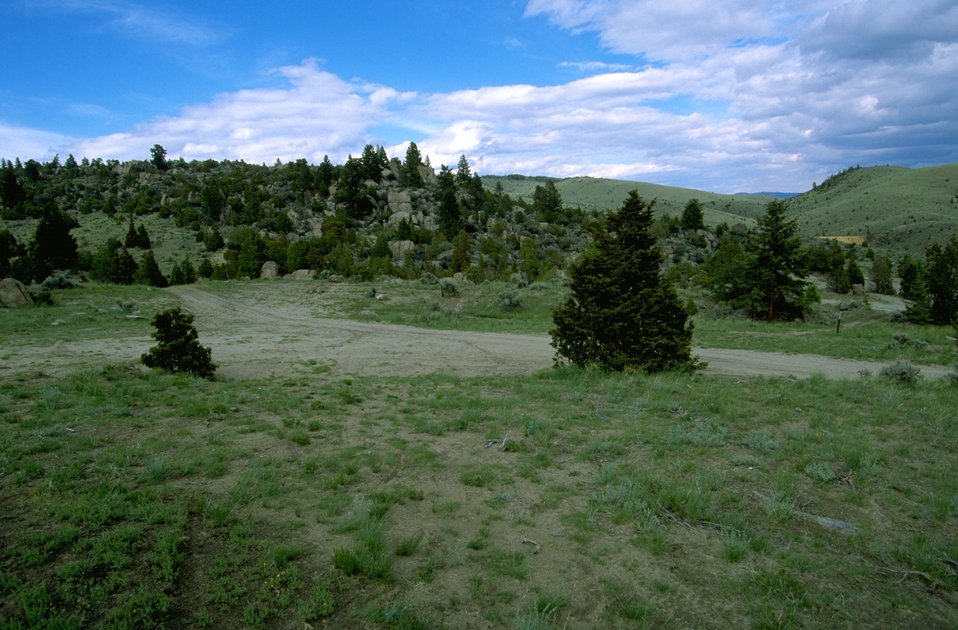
Roads in the Pipestone Hills